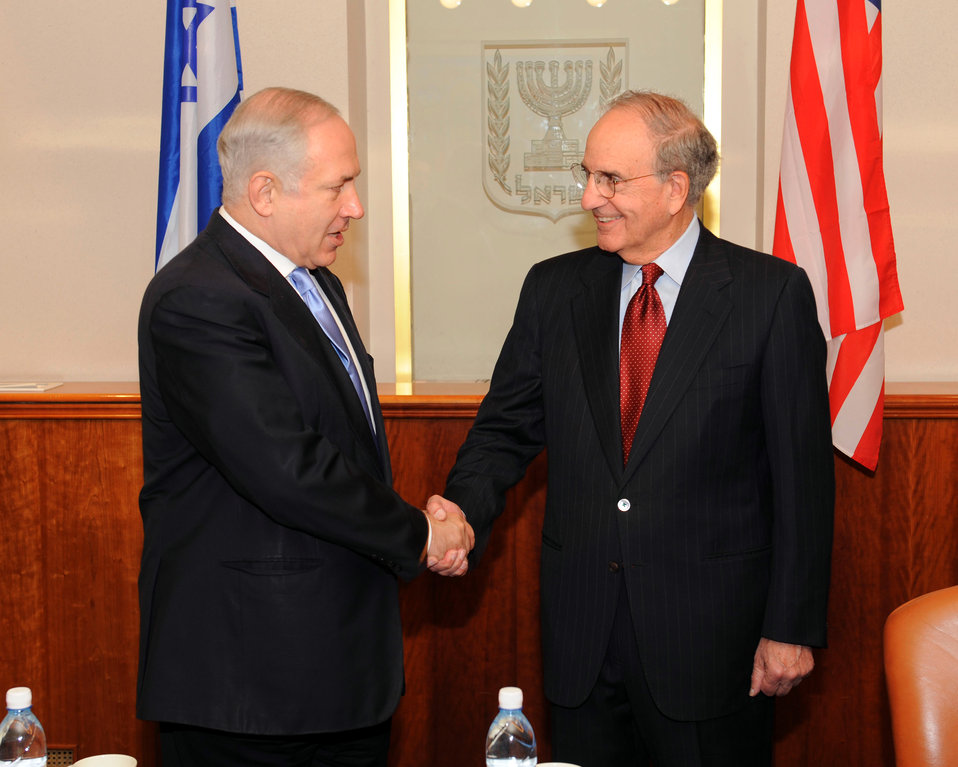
Special Envoy Mitchell Meets With Israeli Prime Minister

U.S. Special Envoy to the Middle East George J. Mitchell meeting with Israeli Prime Minister Benjamin Netanyahu at the Prime Minister Office in Jerusalem October 30, 2009.